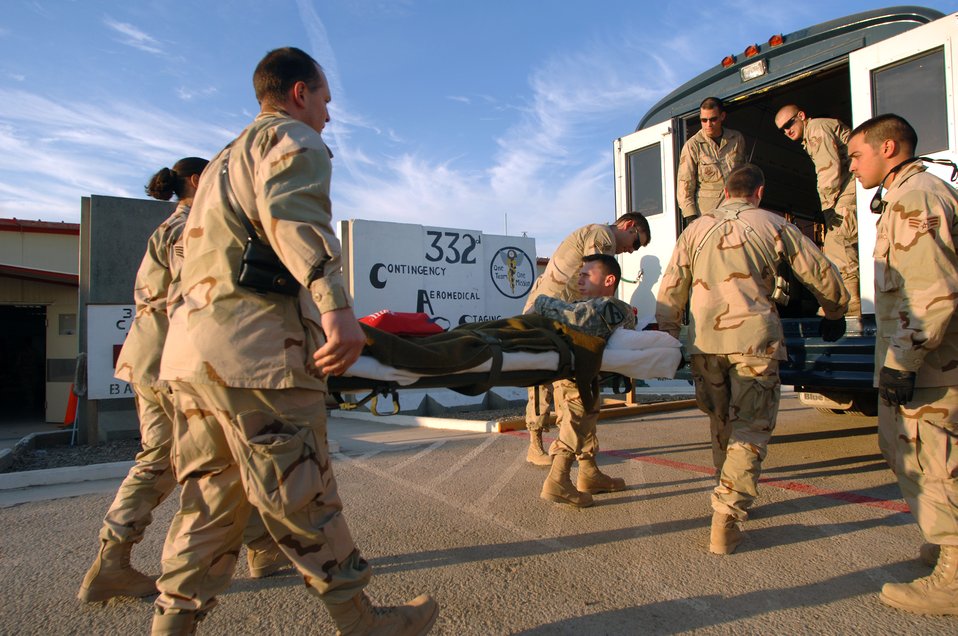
Staging facility prepares injured warfighters for flight

Airmen from the 332nd Air Expeditionary Wing volunteer at the Contingency Aeromedical Staging Facility to help load injured Soldiers onto a medical evacuation bus bound for the flightline Feb. 21 at Balad Air Base, Iraq. The Contingency Aeromedical Staging Facility is a staging where patients are prepared for their flight out of Iraq for further medical treatment at Landstuhl, Germany.